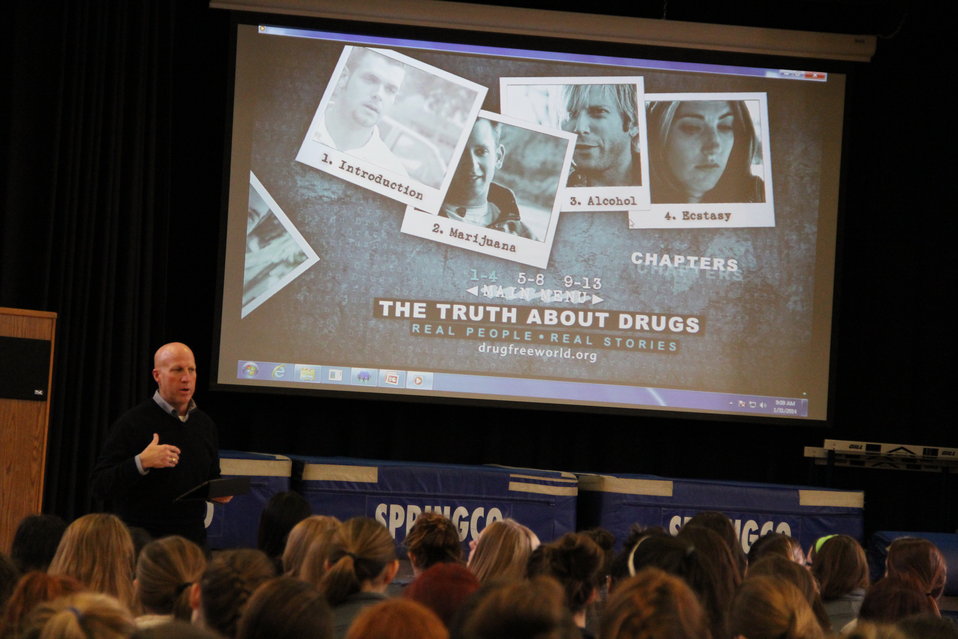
Taking a Stand in 2014, National Drug Facts Week

Teens at Mount Alvernia High School in Newton, Mass. spend time with Superintendent Robert Merner as he talked to the them about drugs and alcohol during NDFW 2014.